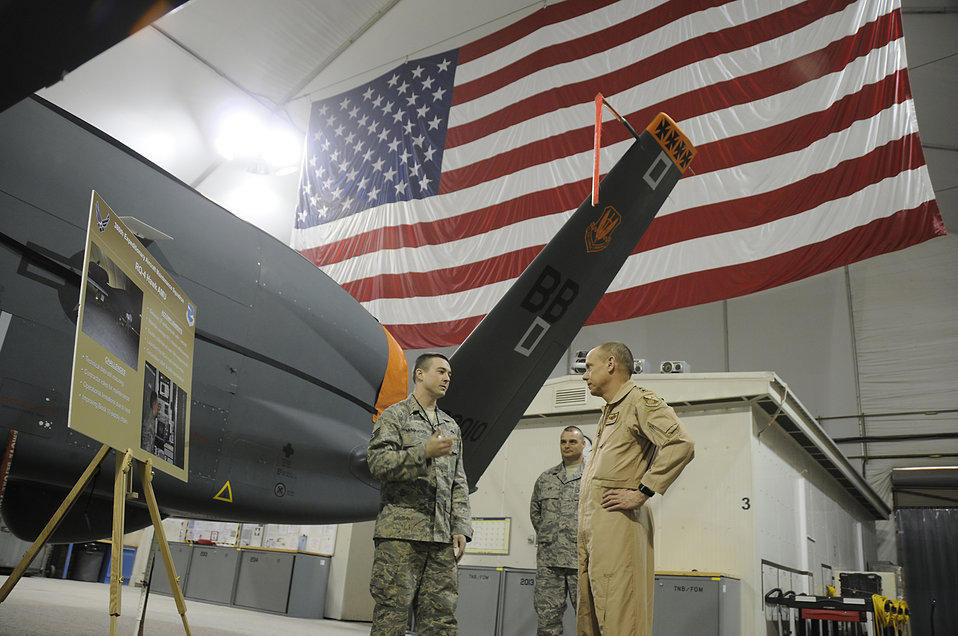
Enhanced Global Hawk to roll out June 25

Gen. Donald J. Hoffman is briefed on RQ-4 Global Hawk operations during a visit with the 380th Air Expeditionary Wing in Southwest Asia in February. Air Force and Northrop Grumman officials will unveil the first Block 40 version of Global Hawk June 25 at Air Force Plant 42 in Palmdale, Calif. The Block 40 variant adds Battle Management and Control capability. The Aeronautical Systems Center at Wright-Patterson Air Force Base, Ohio, manages the RQ-4 fleet. General Hoffman is the Air Force Materiel Command commander.